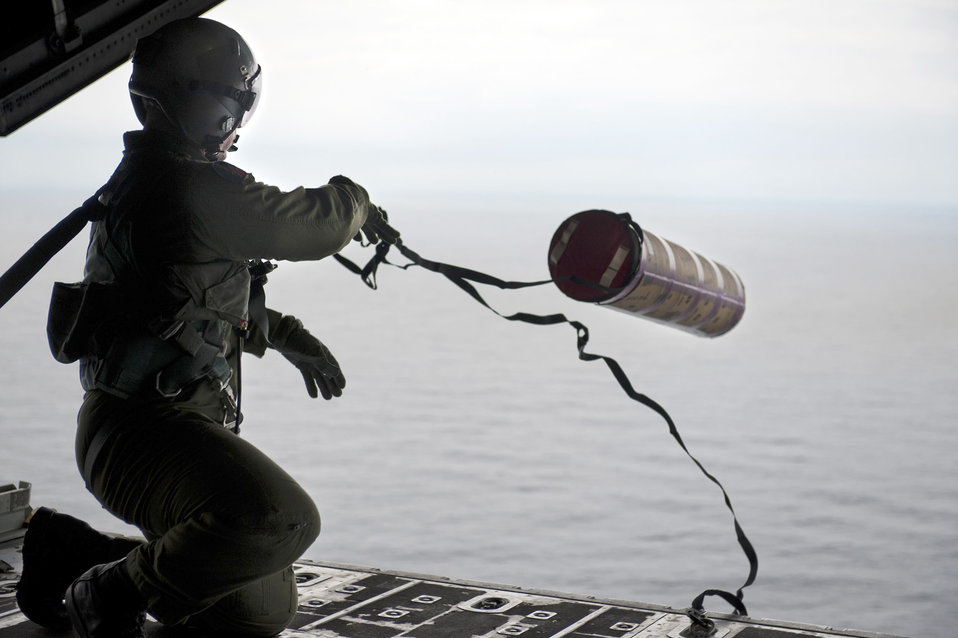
Eagle airlifters aid Japan, U.S. map Honshu currents

PACIFIC OCEAN -- Staff Sgt. Blake Landry 36th Airlift Squadron loadmaster deploys a Davis Drifter Buoy from a C-130 Hercules off the eastern coast of Japan, April 29, 2011. The C-130 crew dropped seven buoys off the eastern coast of Japan to help Japanese and American scientists monitor ocean currents.